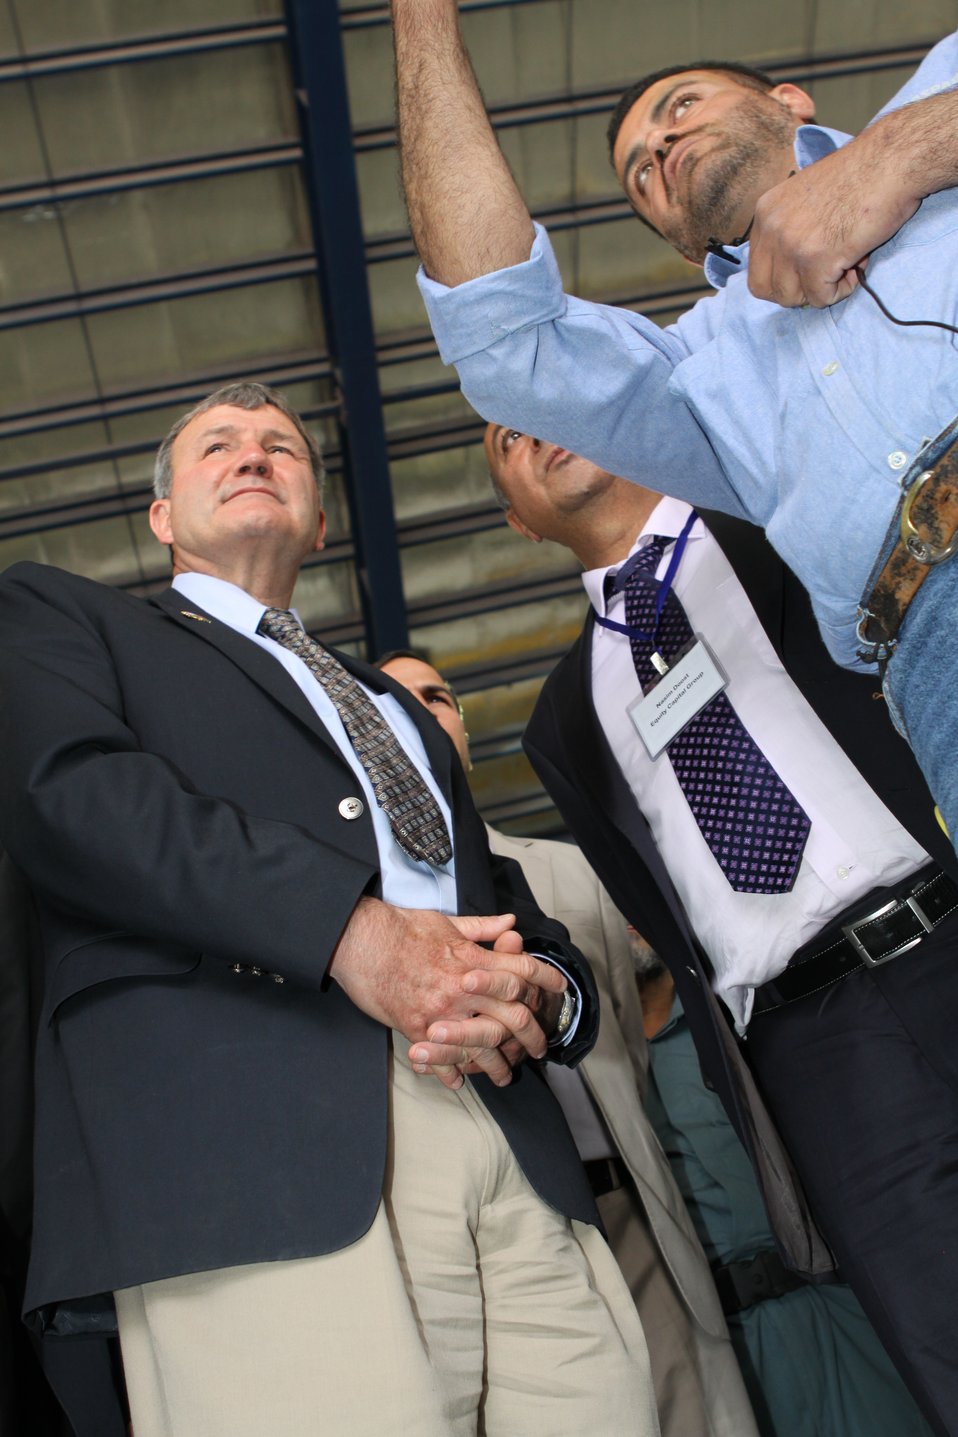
100525 Hirat Marble Conference 387